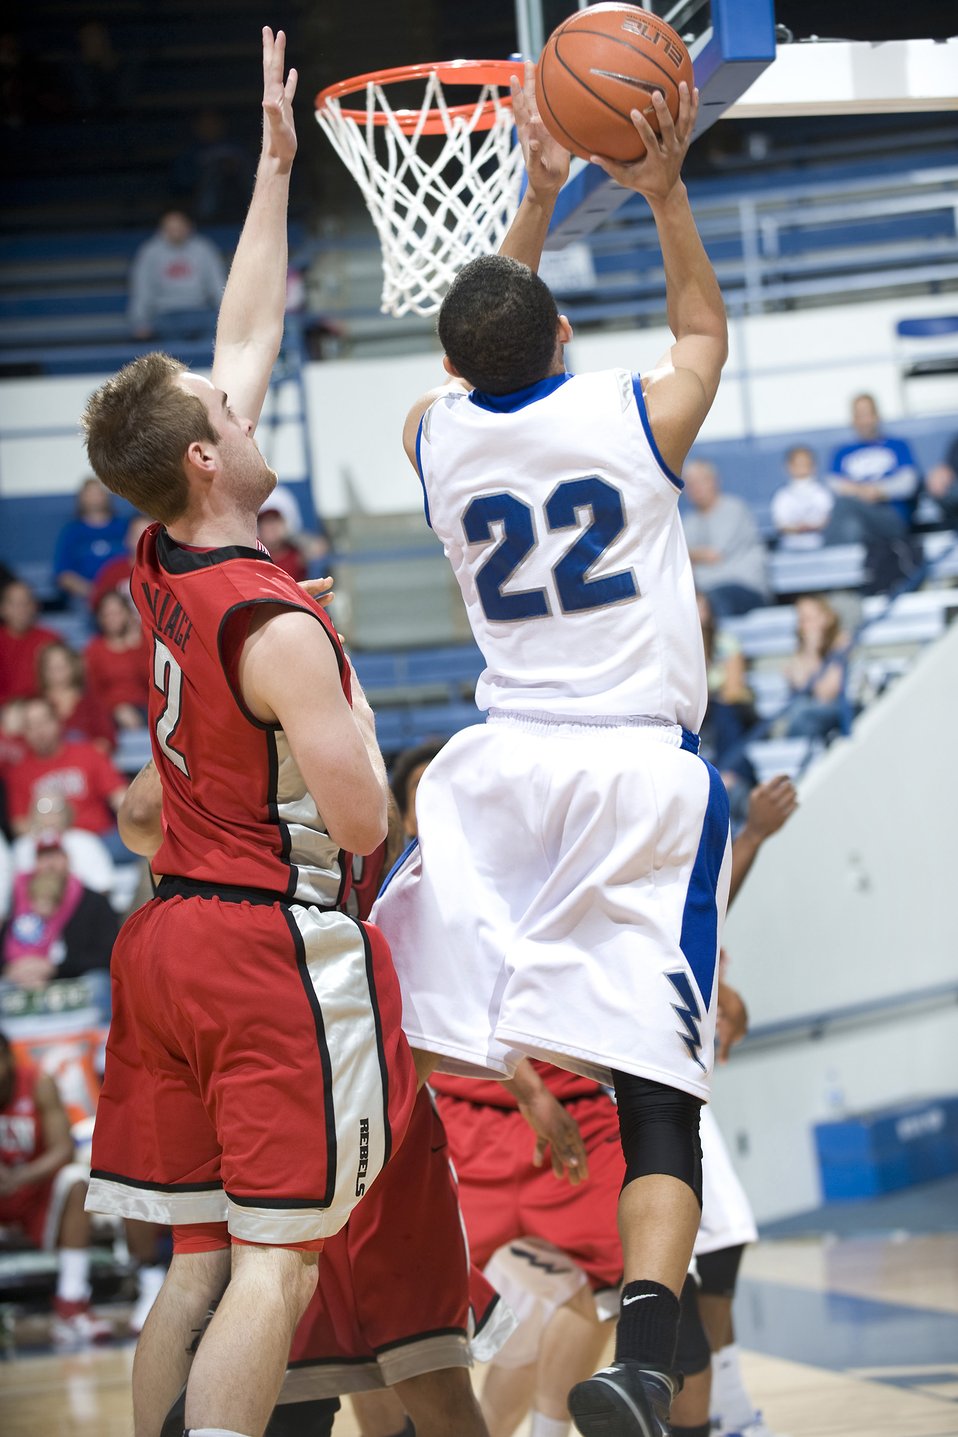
Falcons fall to Running Rebels

Air Force senior guard Avery Merriex goes up for two during the game against the University of Nevada Las Vegas at the U.S. Air Force Academy's Clune Arena, Feb. 27, 2010. The Falcons were unable to get much penetration against a swarming man-to-man Rebel defense, and were forced to spend much of their time on the perimeter. UNLV went on to defeat the Falcons for the fifth consecutive time by a score of 77 to 47.